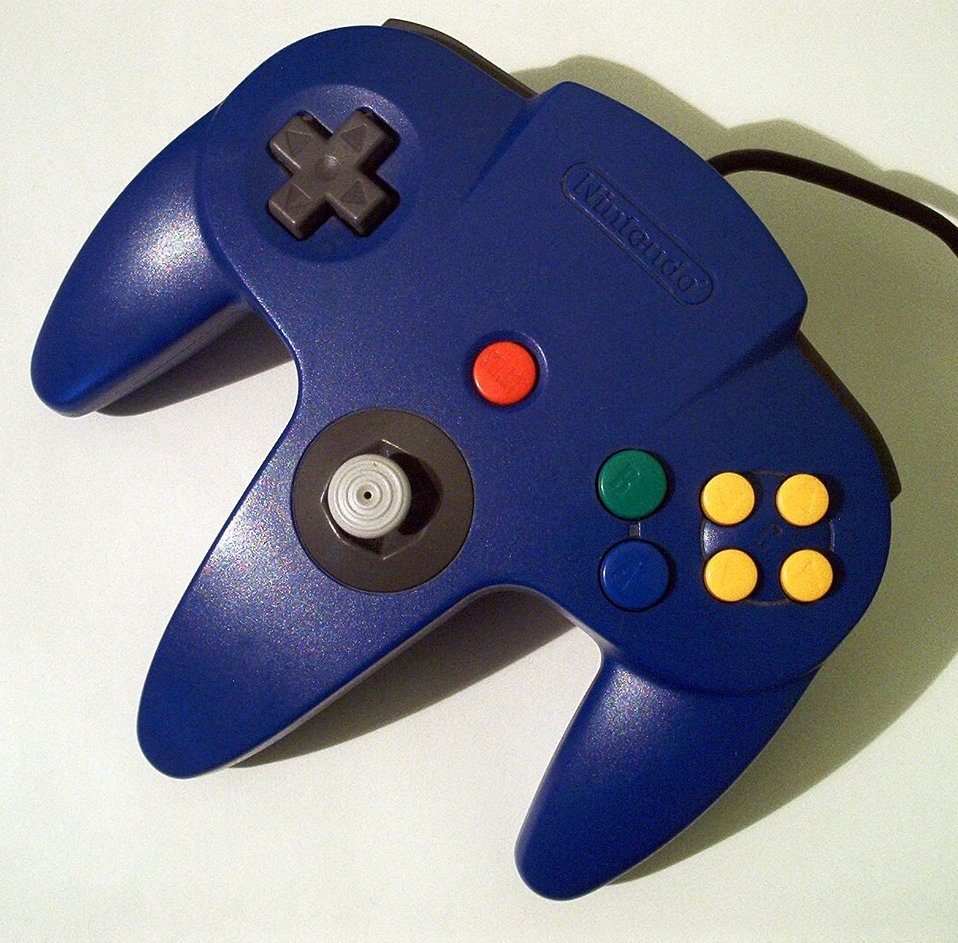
N64-controller-blue1